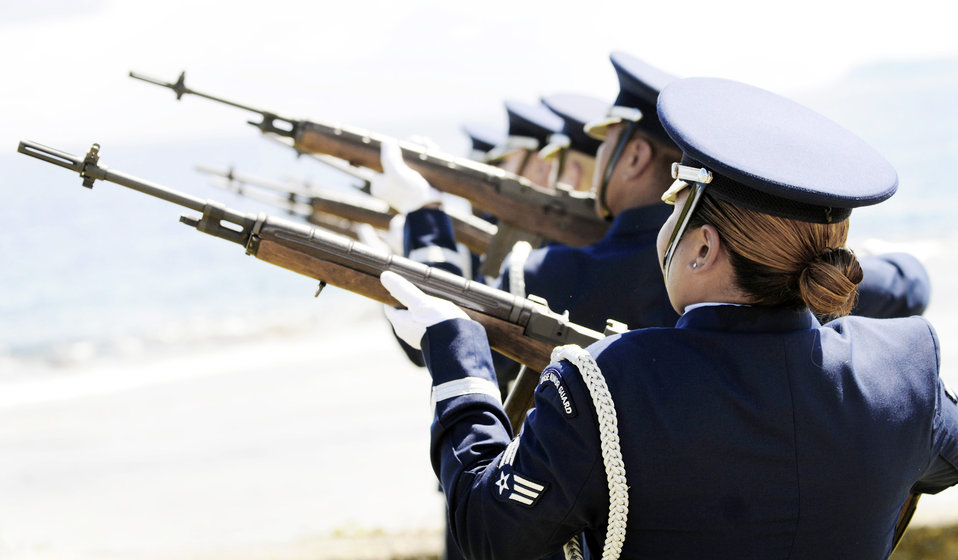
To respect and honor

Airmen from the 36th Wing Honor Guard at Andersen Air Force Base, Guam, conduct a 21-gun salute July 20 during the RAIDR 21 Memorial ceremony at the Governor's Complex in Hagatna, Guam. Family and co-workers along with residents of the community honored the aircrew with the ceremony where a memorial dedicated to the Airmen was unveiled. The aircrew died when their B-52 Stratofortress crashed off the coast of Guam a year ago.